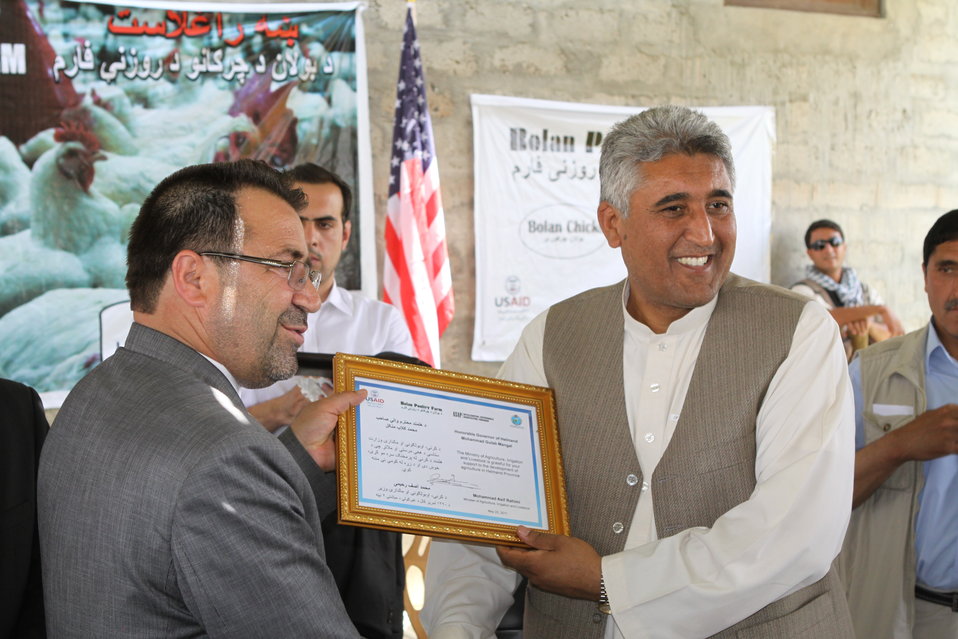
Bolan Poultry Farm